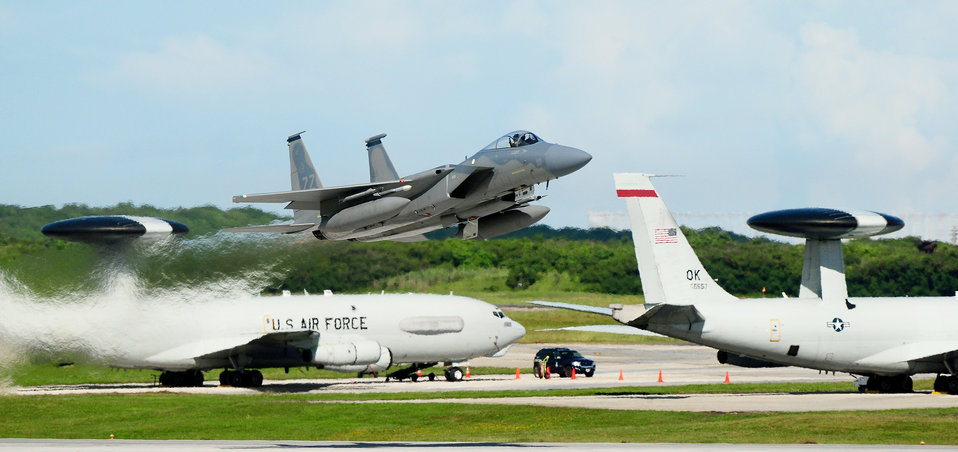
Fast getaway

An F-15 Eagle takes off from the Andersen Air Force Base, Guam, flightline as two E-3 Sentries are seen in the background while participating in the Valiant Shield 2010 exercise Sept. 16, 2010.